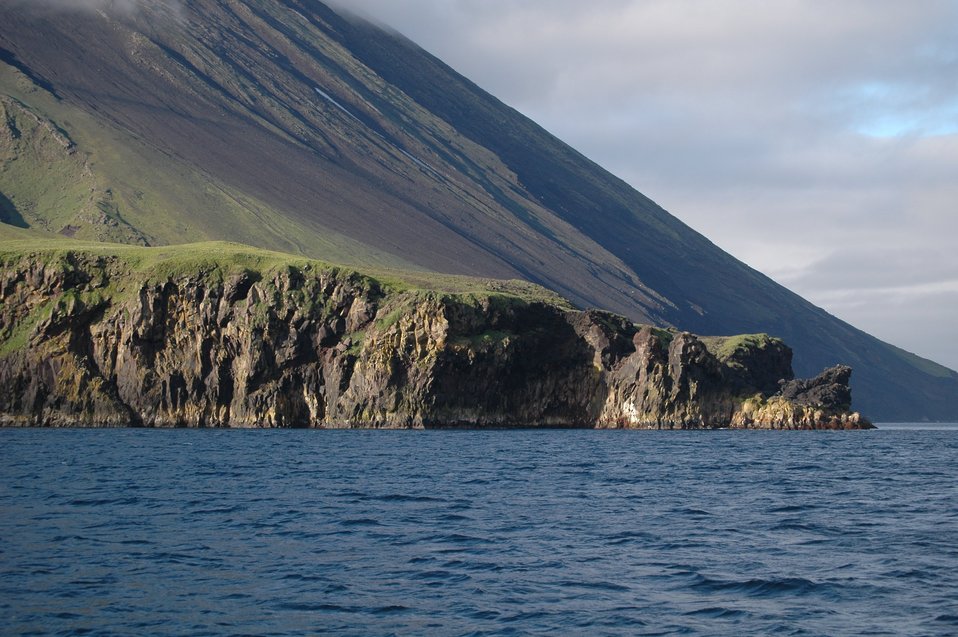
The flank of Tanaga Volcano illustrating the steepness of Aleutian stratovolcanoes.